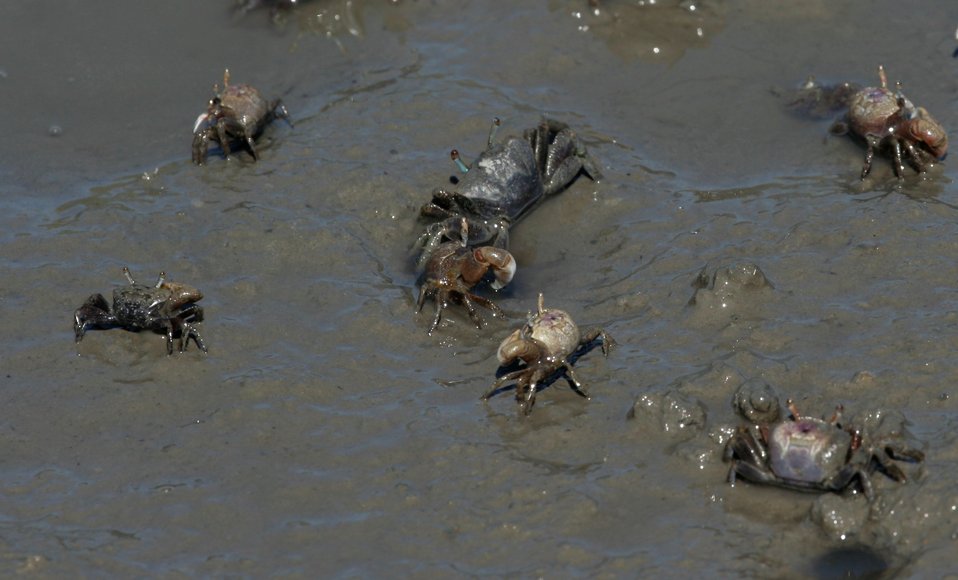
Sand fiddler crab (Uca pugilator) at Pinckney Island National Wildlife Refuge, South Carolina.